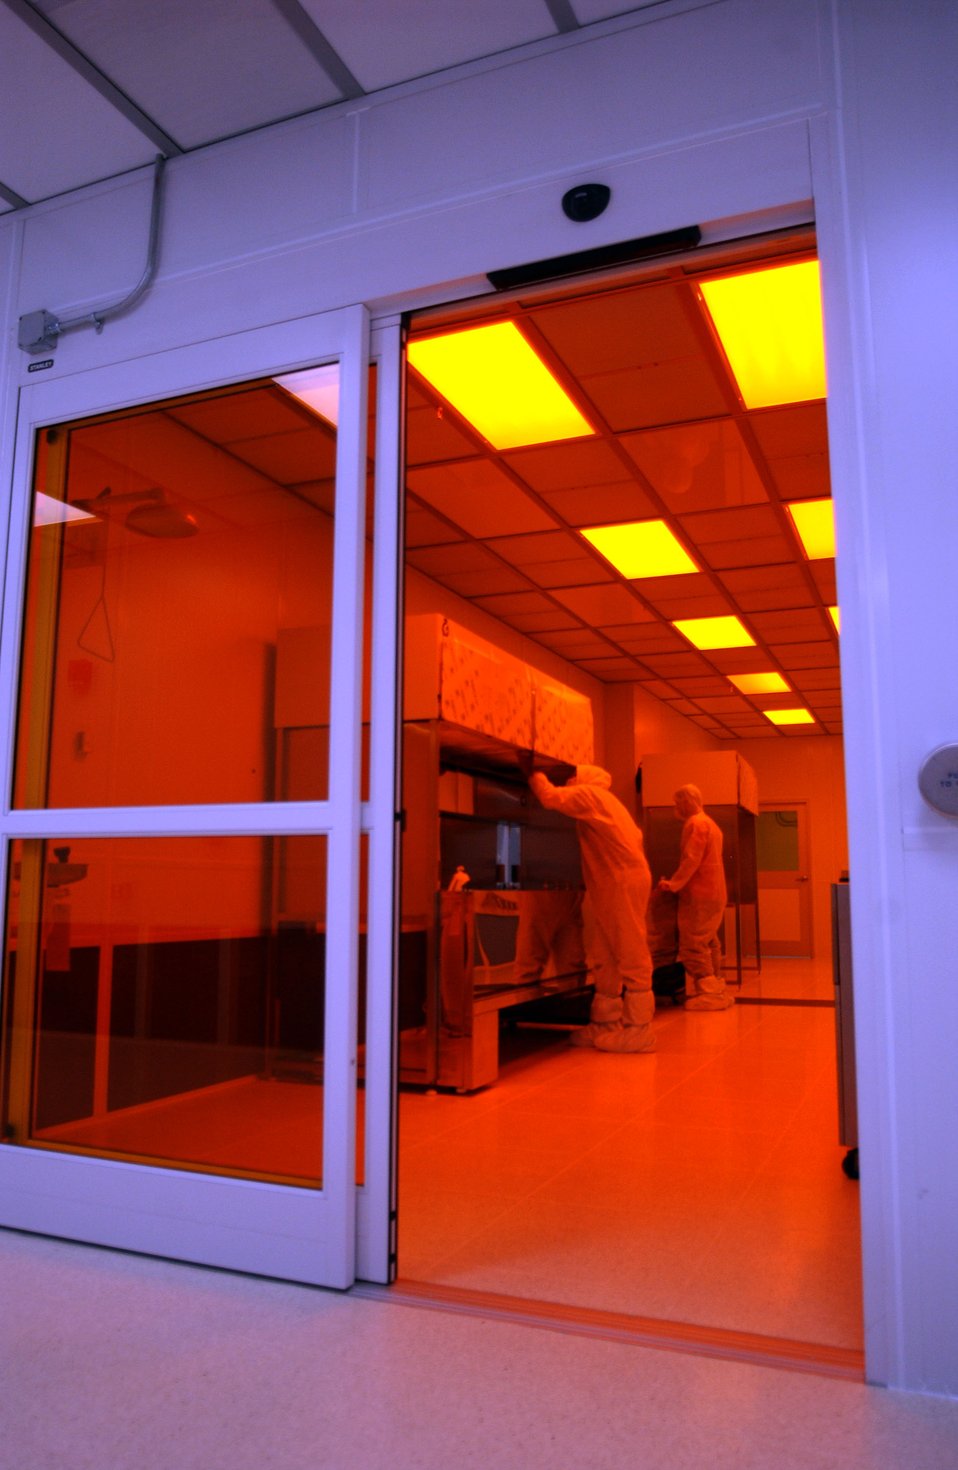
Clean Room at Center for Nanophase Materials Sciences

05-220-202 DOE photo by Lynn Freeny

Clean Room at Center for Nanophase Materials Sciences Oak Ridge National Lab. Oak Ridge Tennessee 8-16-2005